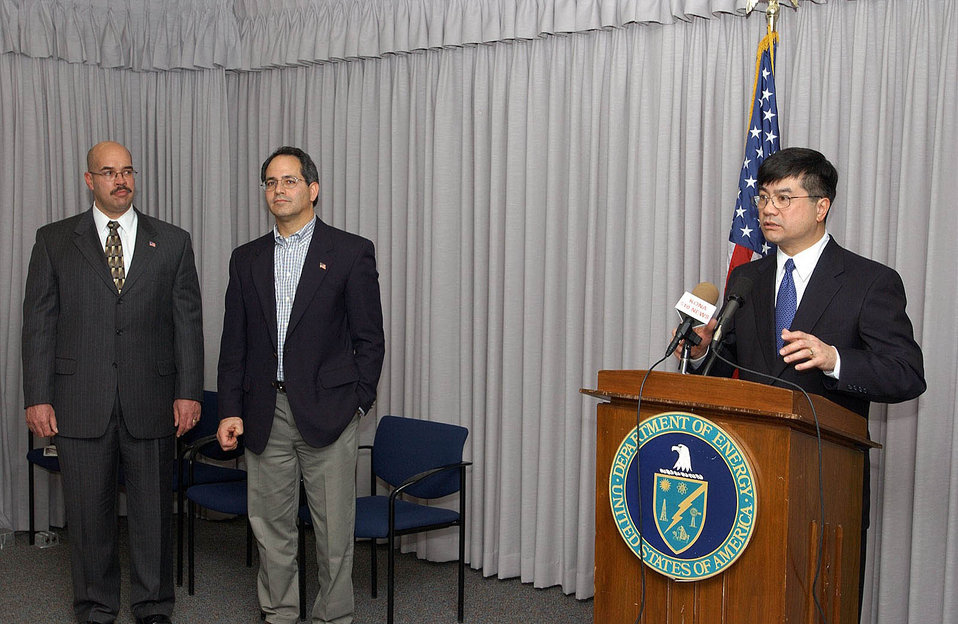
Former Washington Governor Locke in 2002